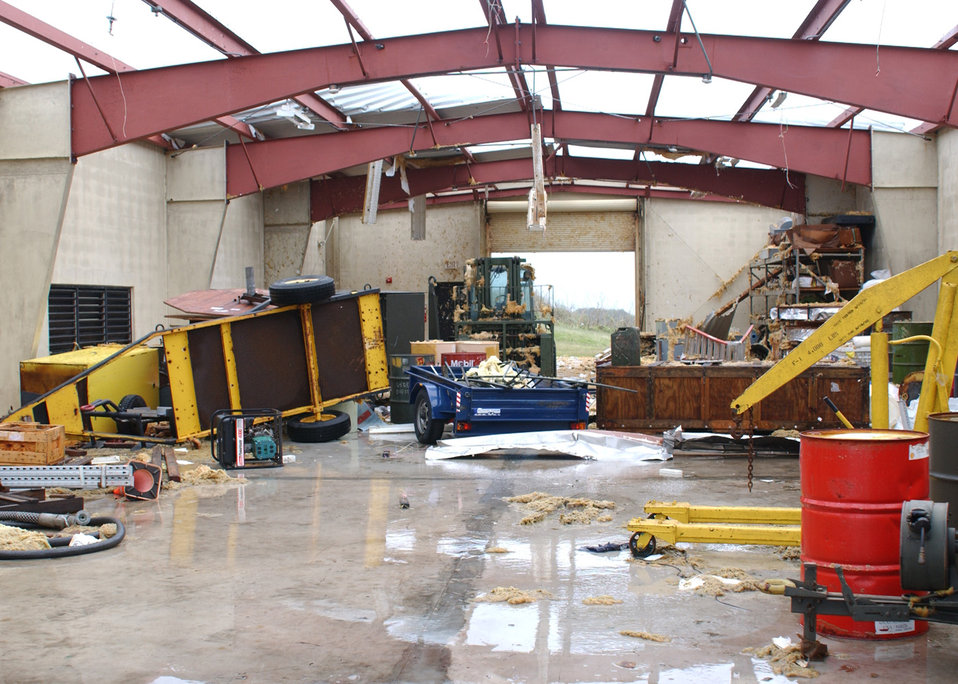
Andersen slowly digs out after typhoon

ANDERSON AIR BASE, Guam -- Typhoon Pongsona delivered extensive damage to several locations around here Dec. 8 such as this building.